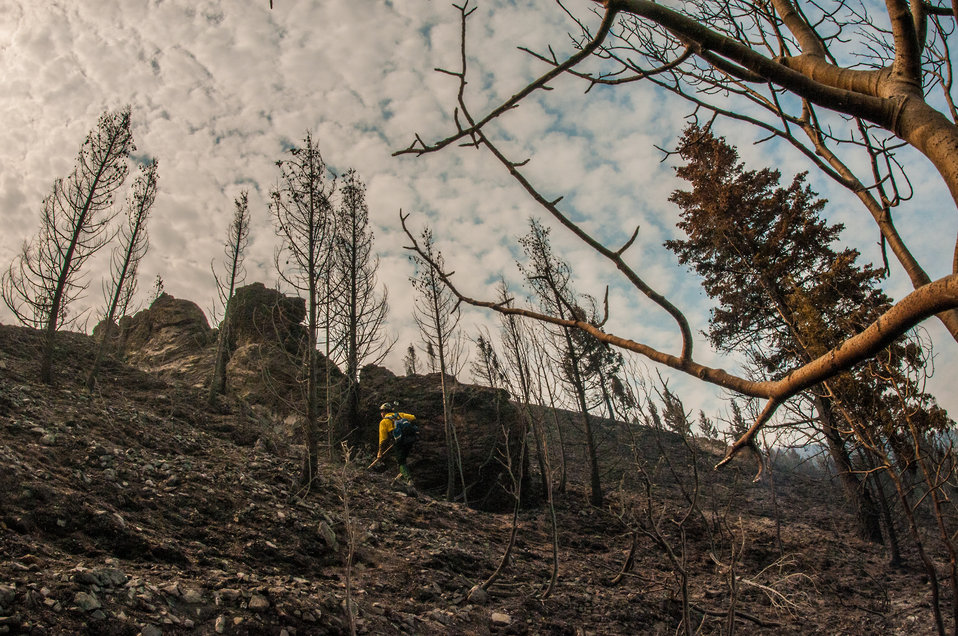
Beaver Creek Fire operations, west of Hailey, ID, in the U.S. Department of Agriculture (USDA) Forest Service (FS) and Sawtooth National Forest and Bureau of Land Management (BLM) on Wednesday, Aug 21, 2013.